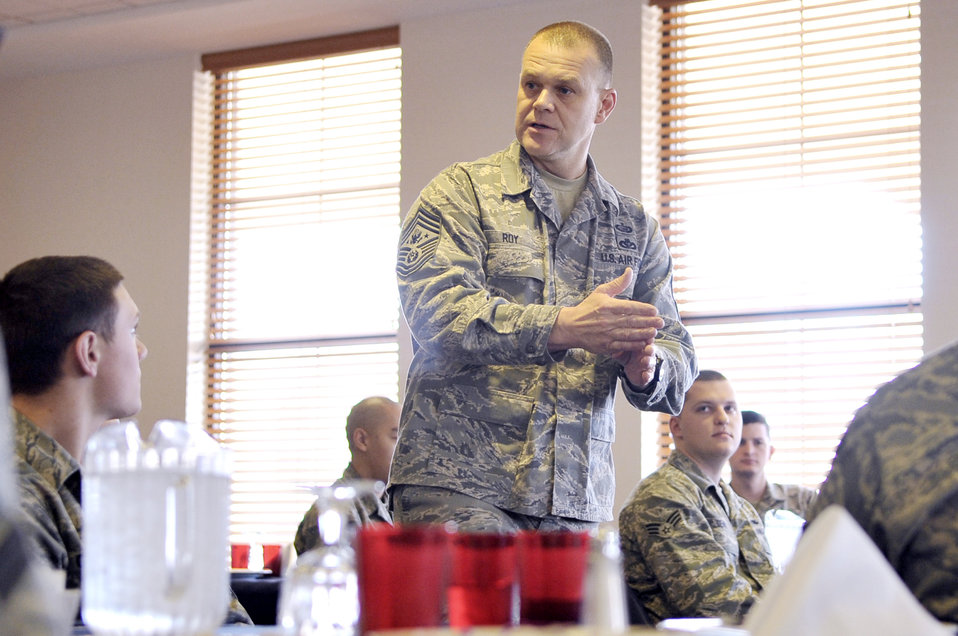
Top enlisted Airman addresses key Cannon issues during visit

Chief Master Sgt. of the Air Force James A. Roy speaks to Airmen at the First Term Airman's Center and the Airman Leadership School during a luncheon Jan.19, 2010, at Cannon Air Force Base, N.M. The chief discussed the role of today's Airmen and how the Air Force is changing.